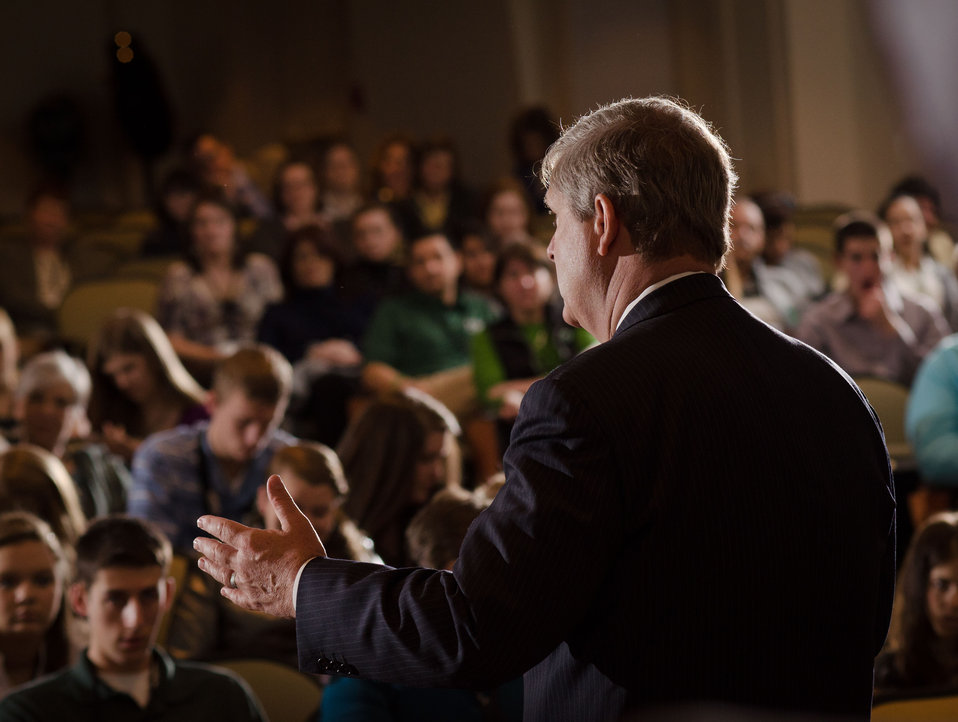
Agriculture Secretary Tom Vilsack speaks with 4-H members at the National 4-H Youth Center in Chevy Chase, MD, on Monday, March 26, 2012. 'For almost 100 years, USDA and 4-H have partnered to produce some of our nation's best and brightest, including farmers and ranchers who have supported the American economy and put food on our tables,' Vilsack said. 'You all are tomorrow's leaders. We need you to think big, innovate and help tackle the important challenges standing between us, a stronger middle class and a stronger nation.'